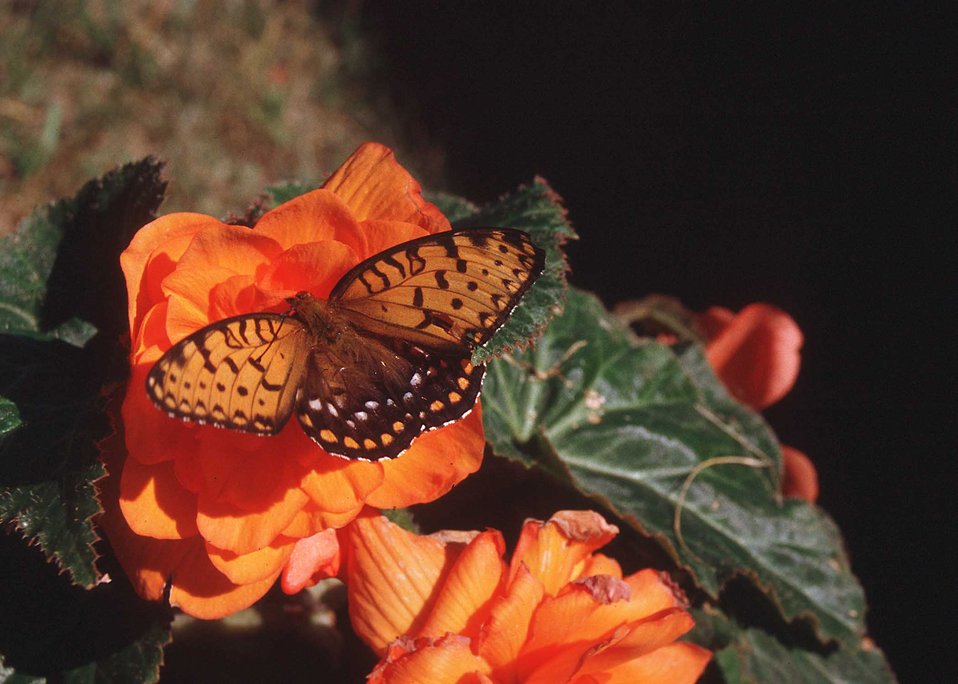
Butterfly on a flower.